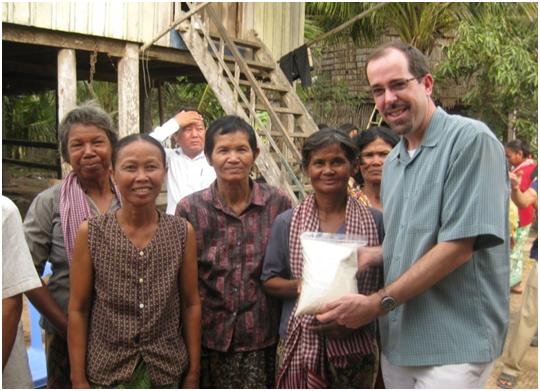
Cambodia Women Farmers Present a Gift to Chris Hegadorn

Chris Hegadorn, Alternate Permanent Representative of the U.S. Mission to the UN Agencies in Rome, is presented with a gift of locally-produced rice grown with FAO technical assistance by a group of women farmers in a local village in Prey Veng Province, Cambodia, on January 24, 2011.